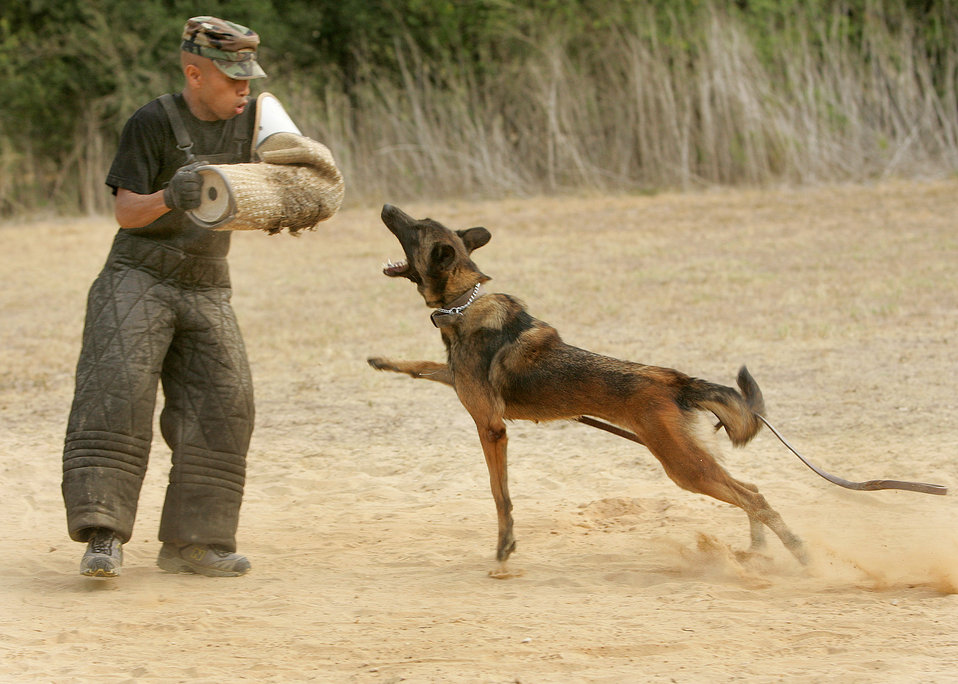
Total Force MWD training

After a pursuit, Staff Sgt. Mark Guerrero presents the bite sleeve to Kim, a military working dog, at Lackland Air Force Base, Texas, Aug. 29. Sergeant Guerrero is a military working dog trainer assigned to the 341st Training Squadron at Lackland.